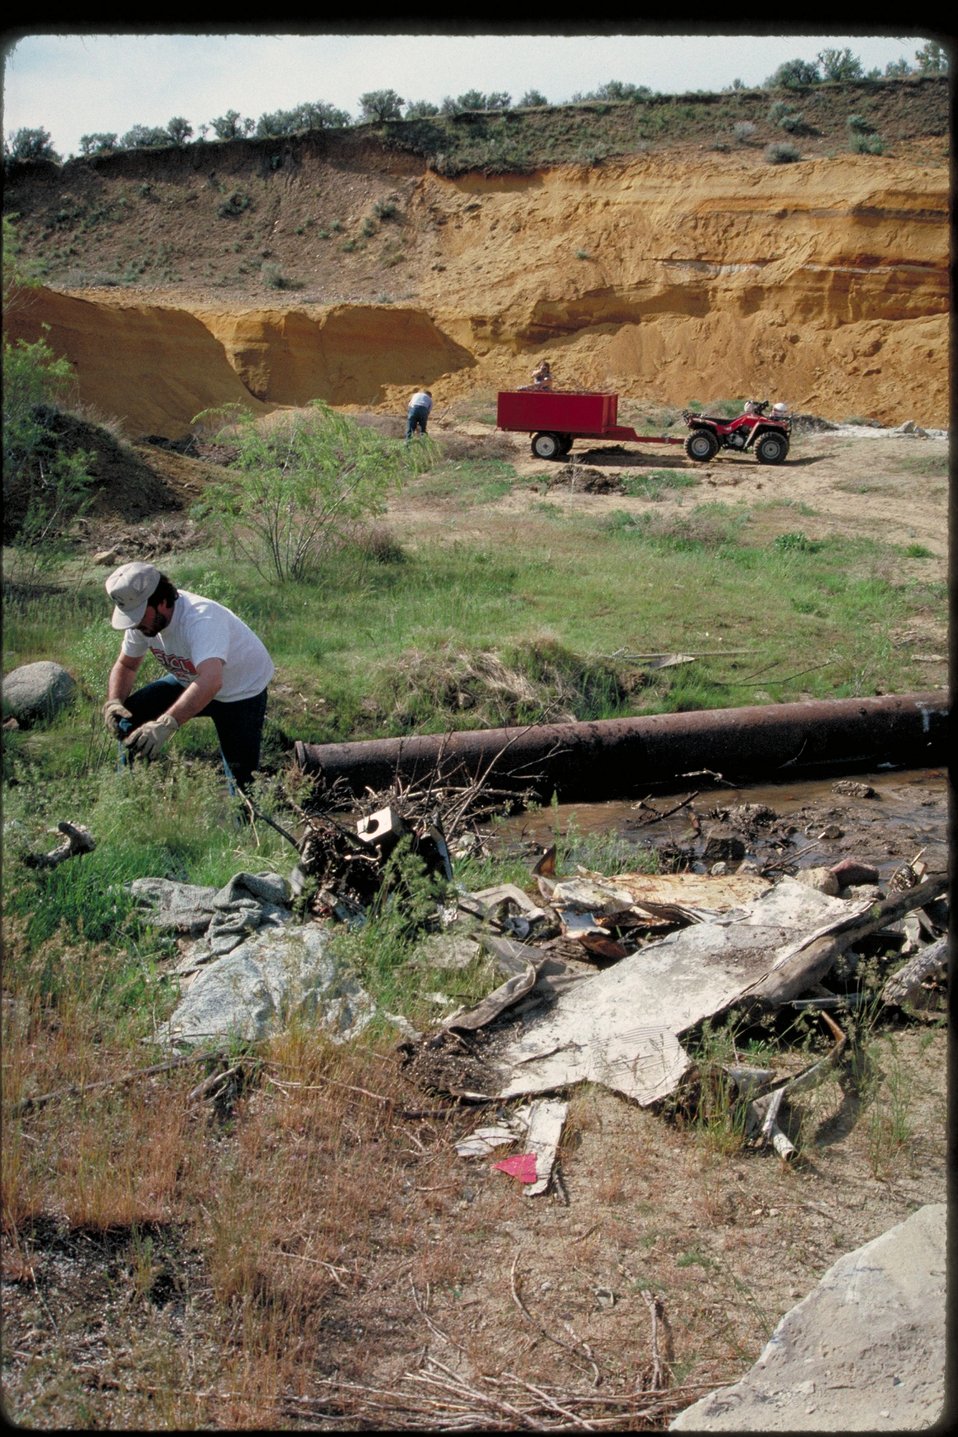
Volunteer cleanup Boise Front Four Rivers Field Office LSRD Lower Snake River District